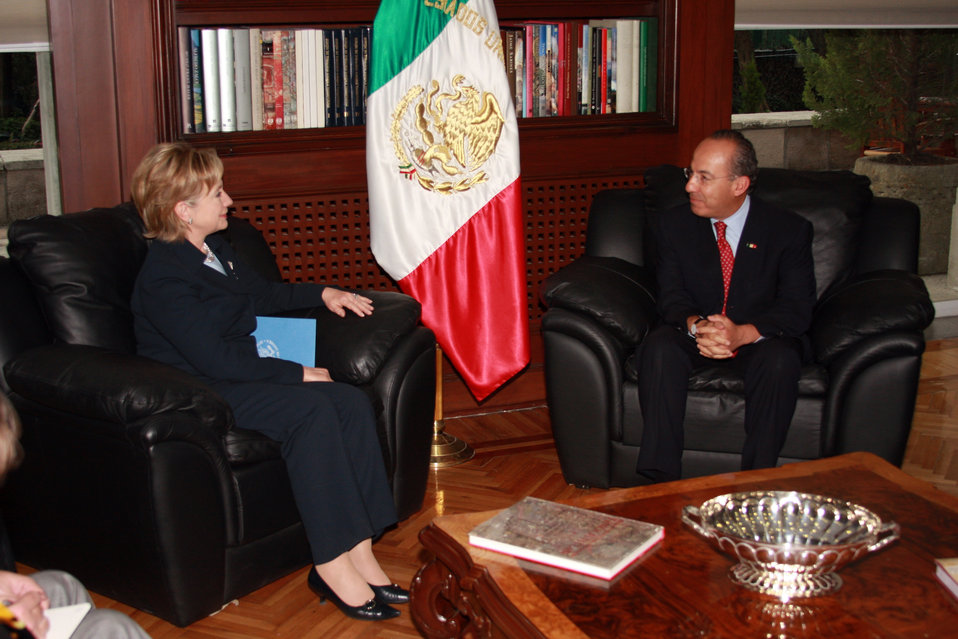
Secretary Clinton Meets Mexican President

U.S. Secretary of State Hillary Rodham Clinton meets with President Felipe Calderon, Mexico City, March 25, 2009.